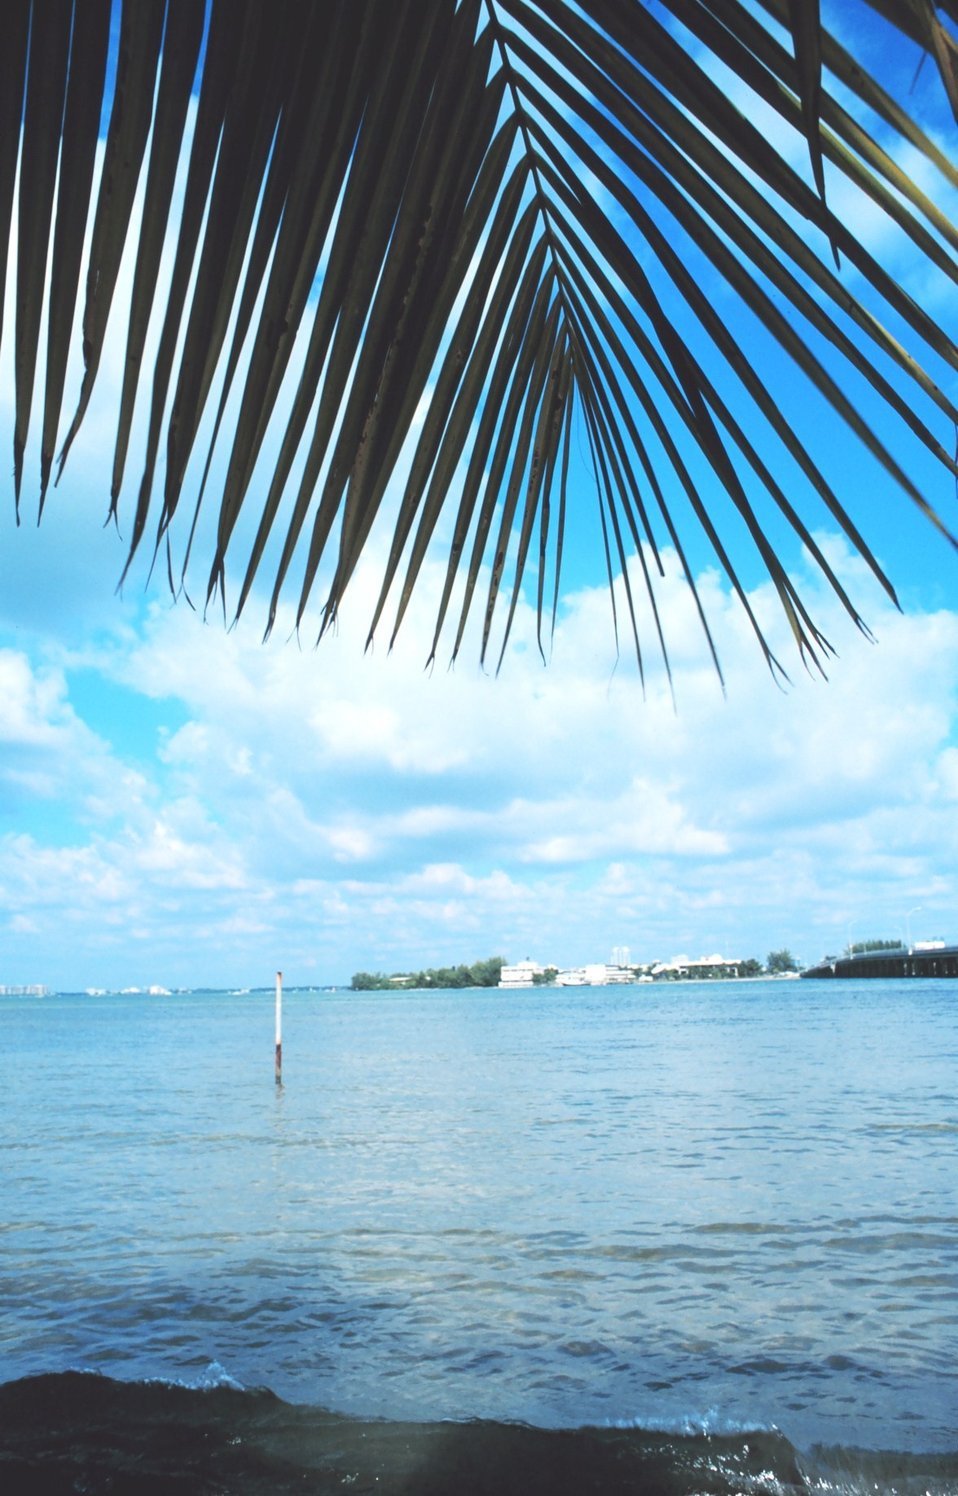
Looking towards the Rickenbacker Causeway from Key Biscayne